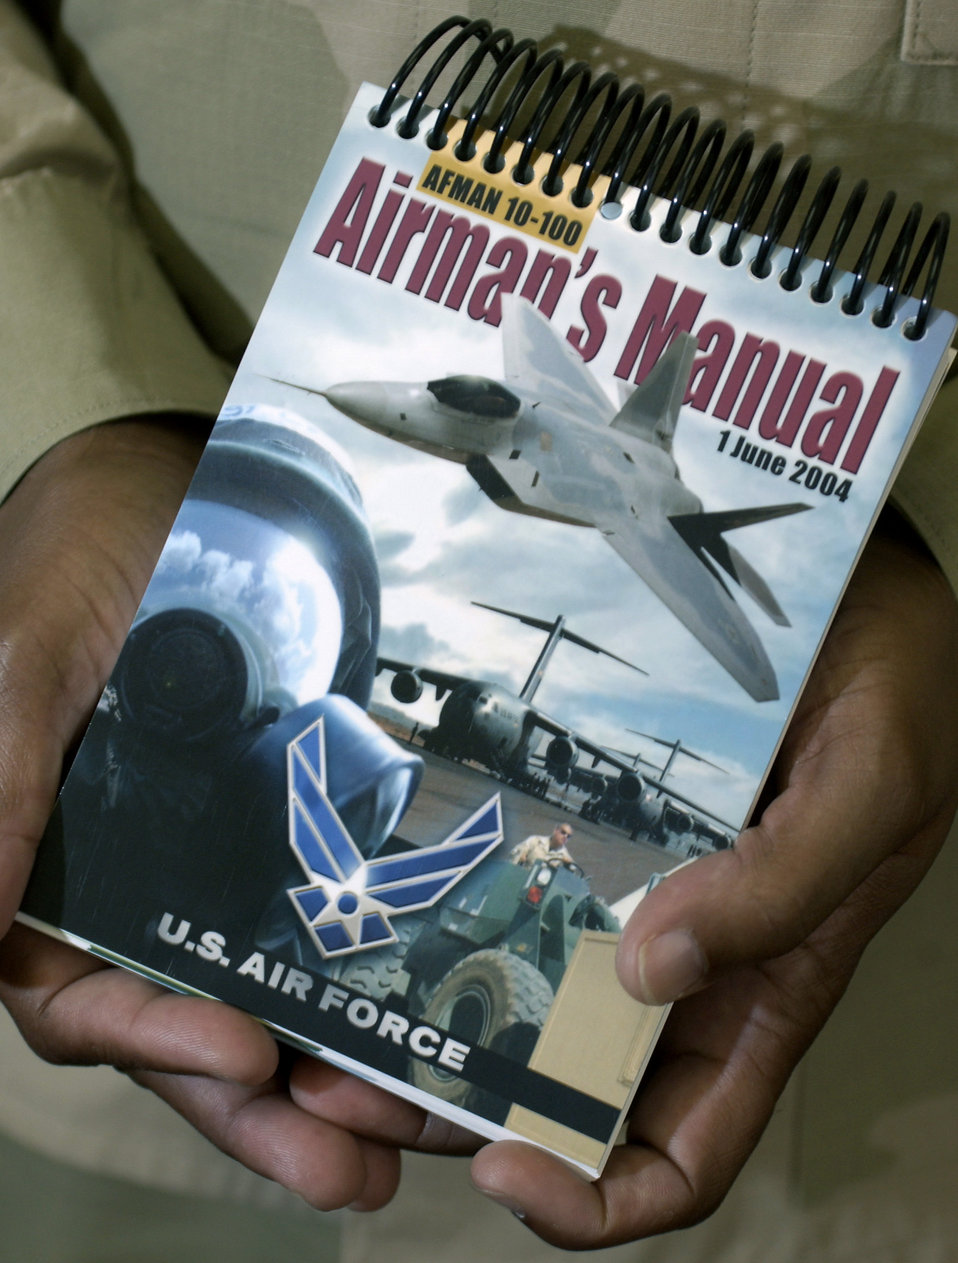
CSAF hands out revised Airman's Manual

ANDREWS AIR FORCE BASE, Md. -- Air Force Chief of Staff Gen. John P. Jumper has distributed the first of more than 675,000 copies of the revised Air Force Manual 10-100, Airman's Manual. A copy will be given to each active-duty, Reserve and Guard Airmen. The new version is weatherproof, tear-resistant and fits in the battle dress uniform's cargo pockets. It combines the old manual with Air Force Handbook 32-4014, Volume 4,